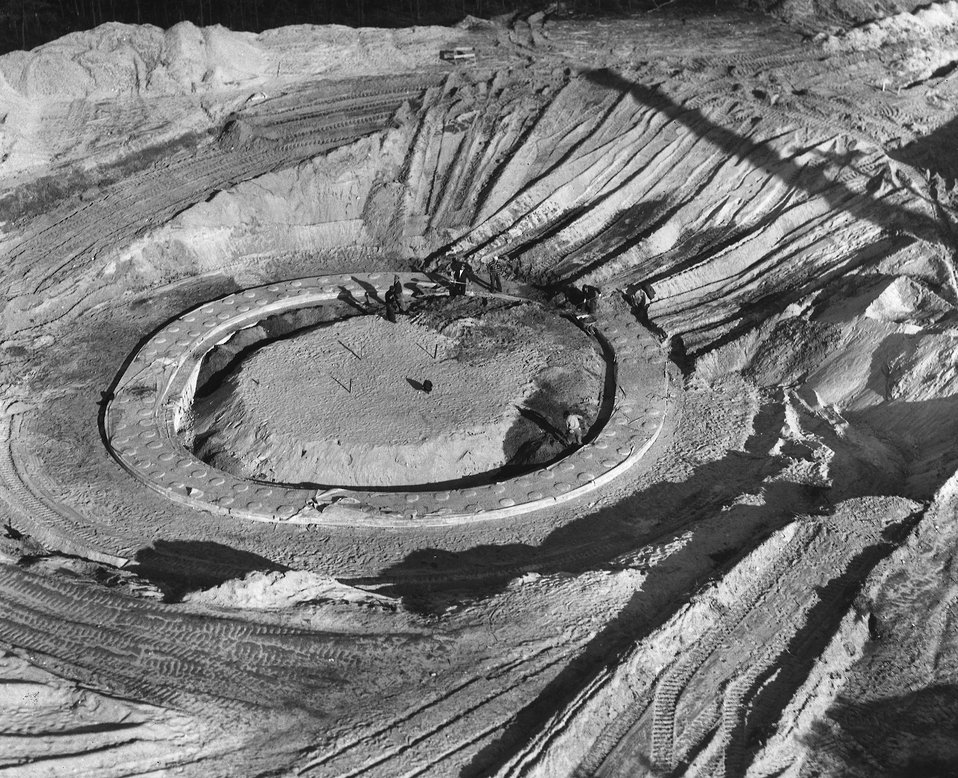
A view of the magnet ring foundation. c. 1949